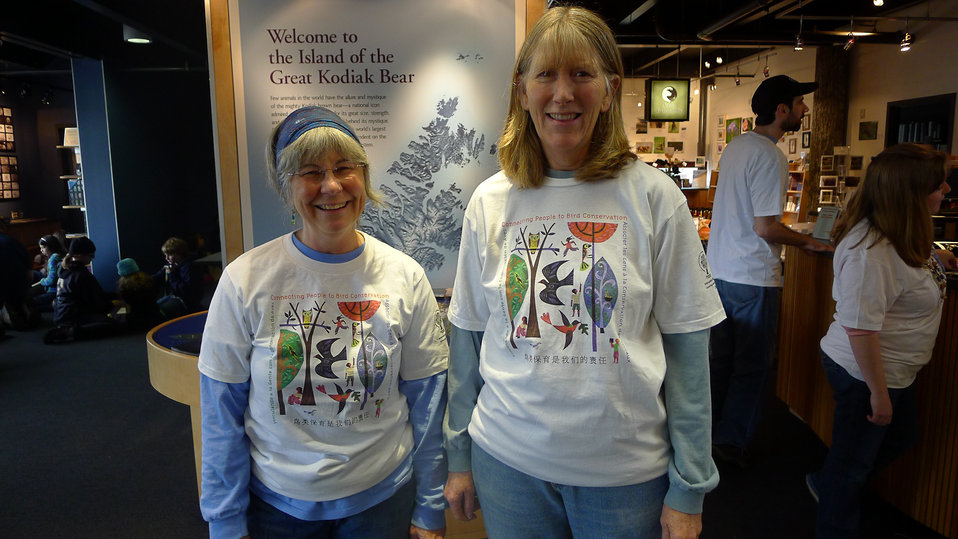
Kodiak Audubon members volunteer at International Migratory Bird Day

Photo Credit: Lisa Hupp/USFWS
Source: Kodiak NWR